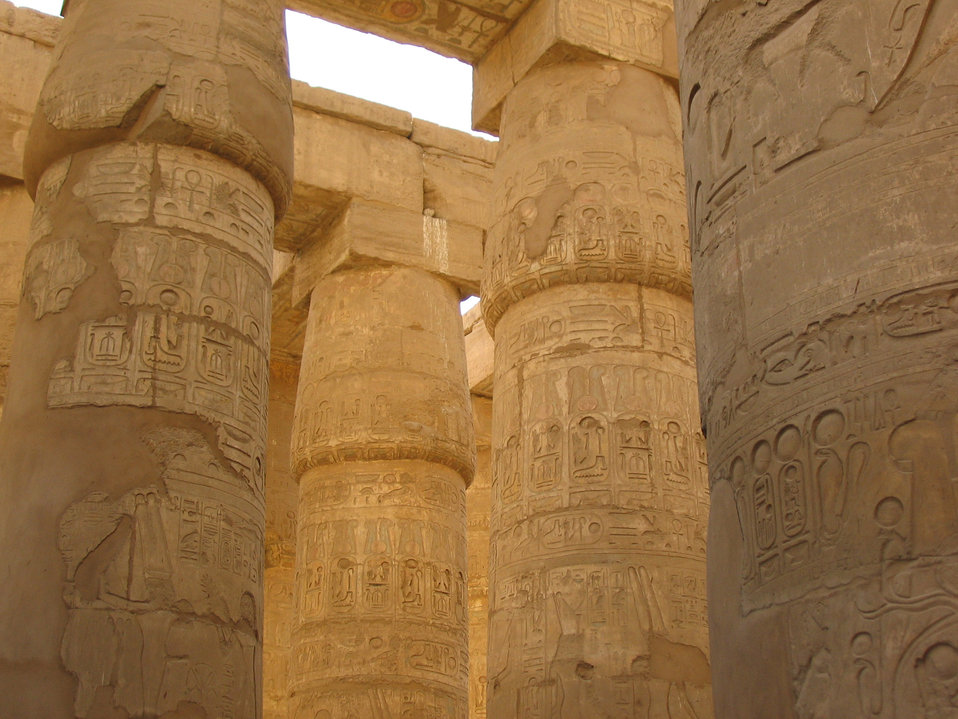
The hieroglyphs on columns - luxor

Hieroglyphics on the column - karnak temple.